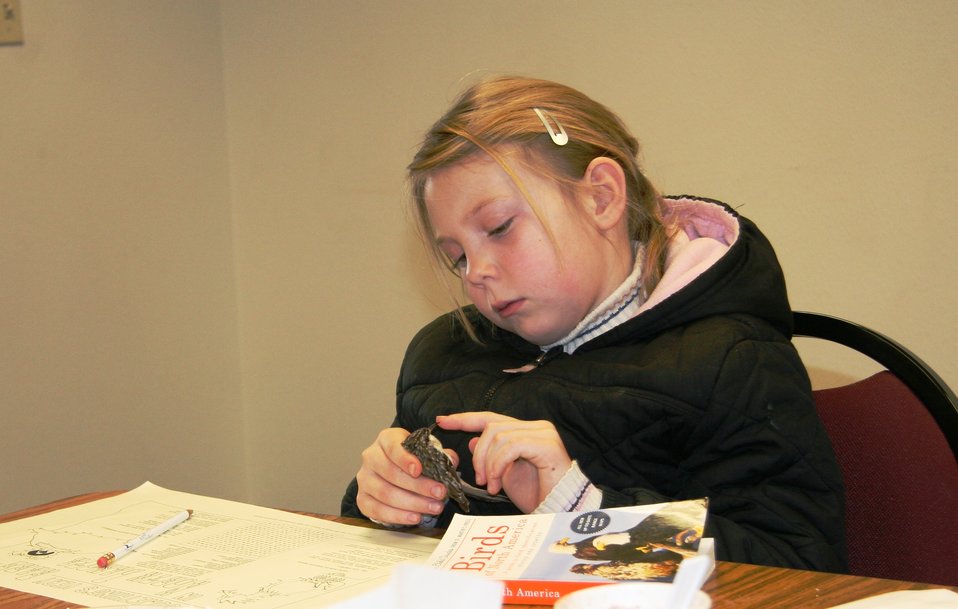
Studying the Brown Creeper up Close

At the end of the program, participants answered questions about what they learned and took home some 'birdy' prizes to share with their feathered friends!